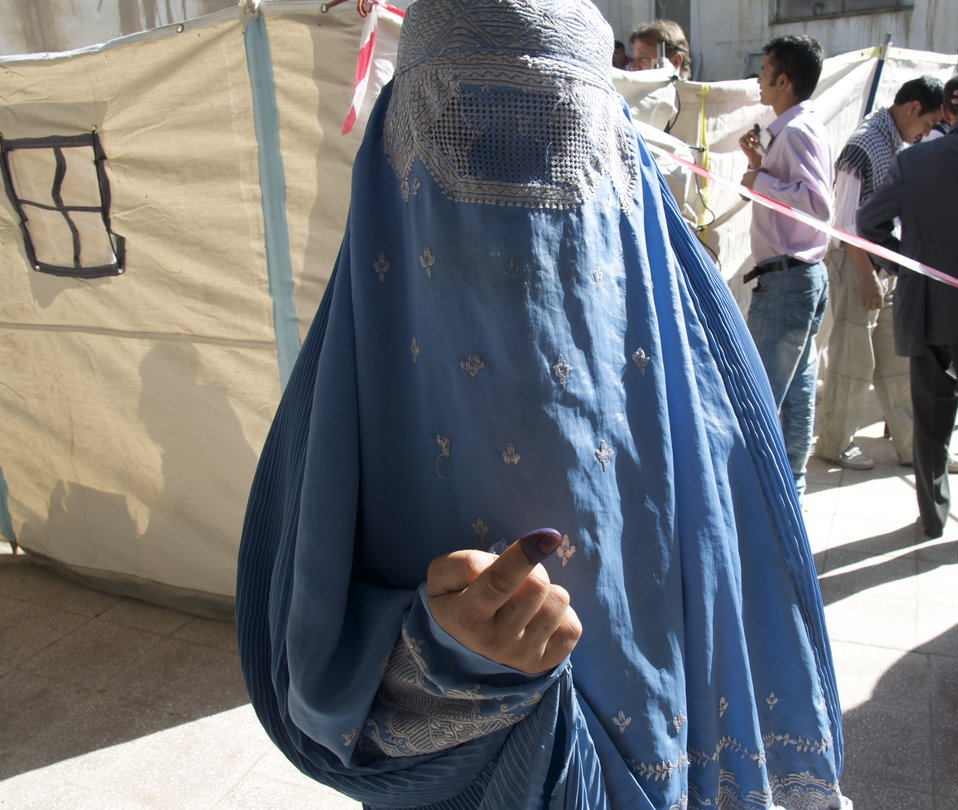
Woman Proudly Shows her Blue Finger